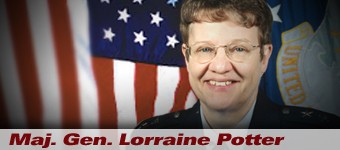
Maj. Gen. Lorraine Potter, the first female Chaplain Service chief, history spotlight graphic